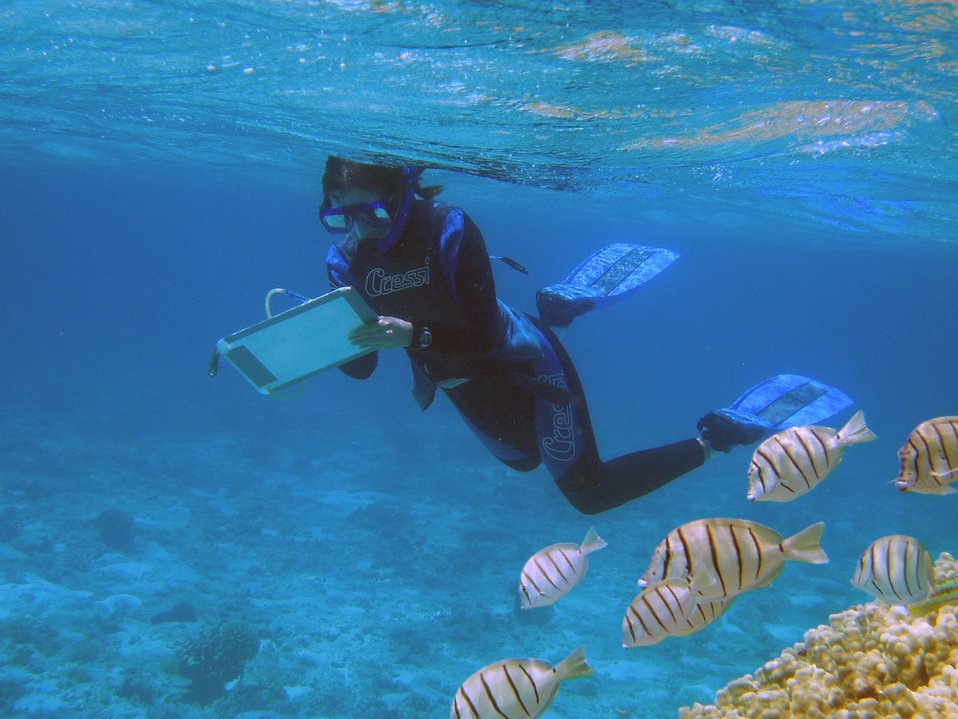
Scientist counting fish while convict tangs oblige by showing up.